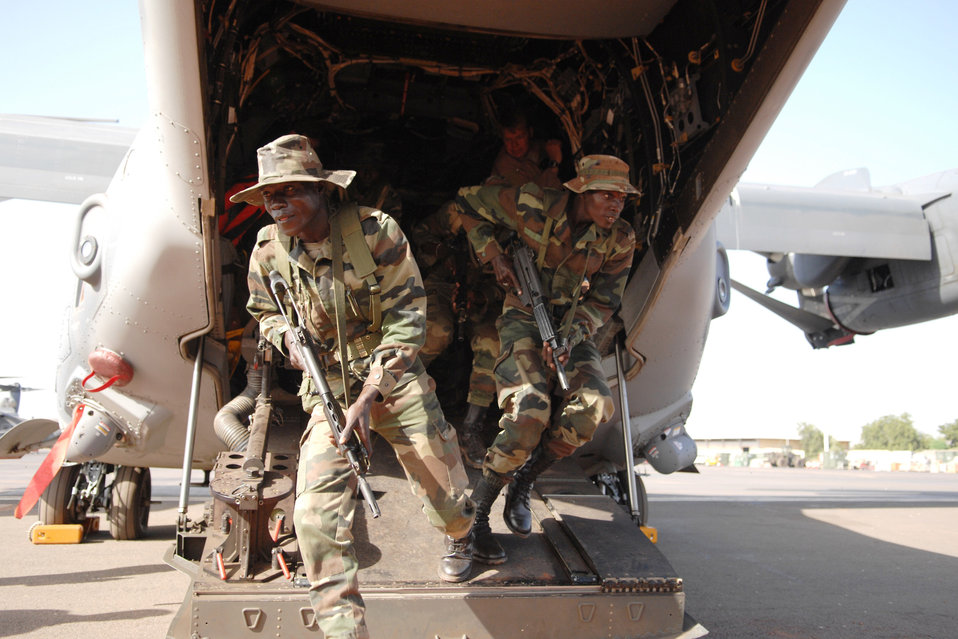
CV-22s complete first operational deployment

Senegalese soldiers exit an Air Force Special Operations Command CV-22 Osprey during mission rehearsals as part of Exercise Flintlock Nov. 16 in Bamako, Mali.